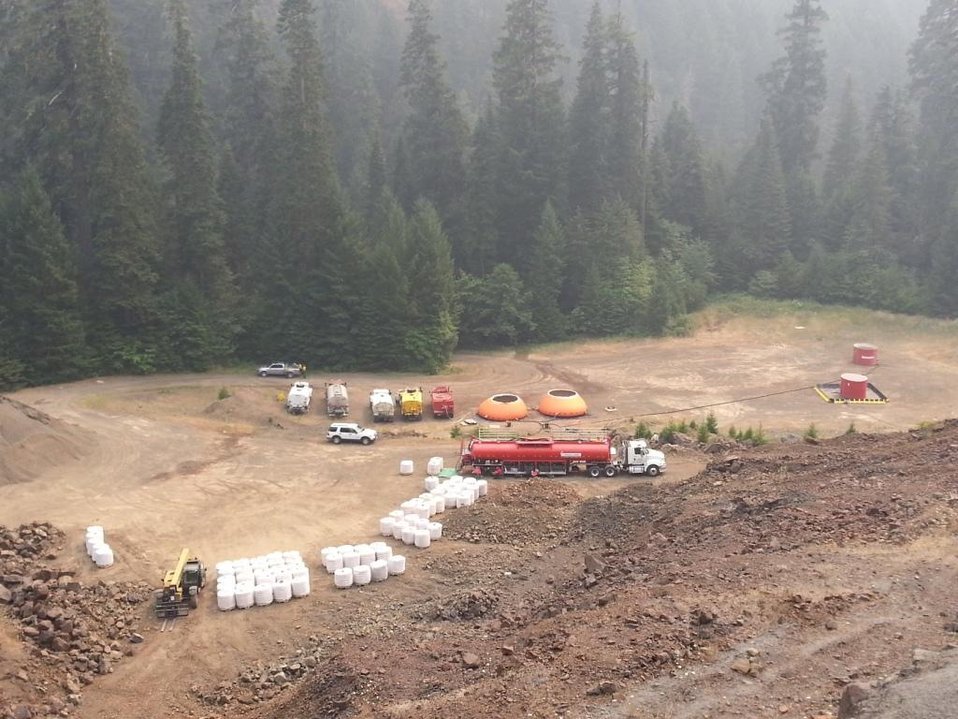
A hemical retardant batch refilling site stands ready at the Whiskey Complex Fire. The Whiskey Complex Fire in the Umpqua National Forest near Tiller, OR began by lightning on Jul. 26, 2013 by lighting has consumed approximately 10,466 acres and is 35% contained.